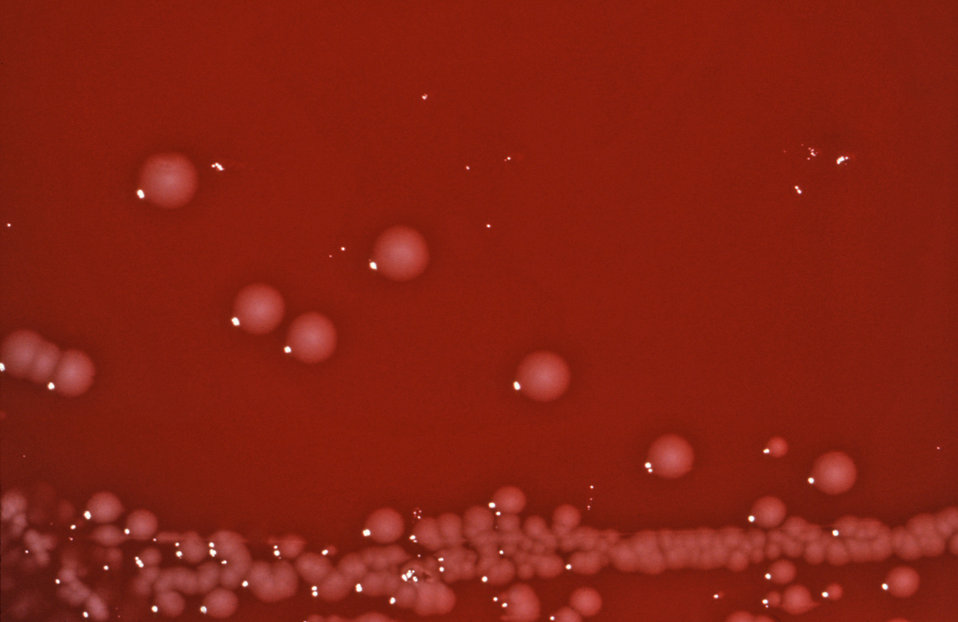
This photograph depicts the colonial morphology displayed by Gram-negative Shigella boydii bacteria on a blood agar plate (BAP).